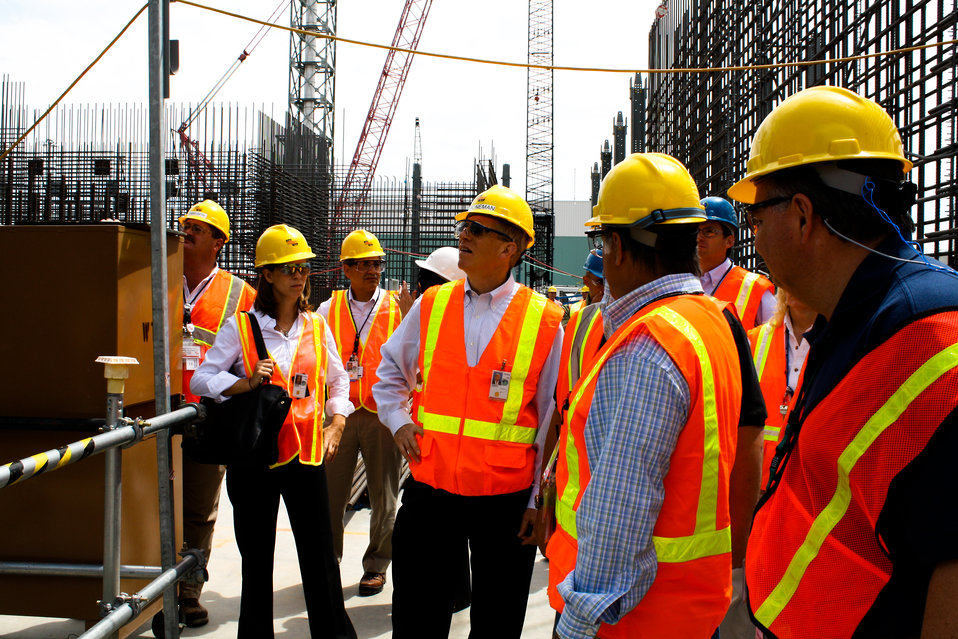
Poneman Vit Plant Visit 06-14-10-91